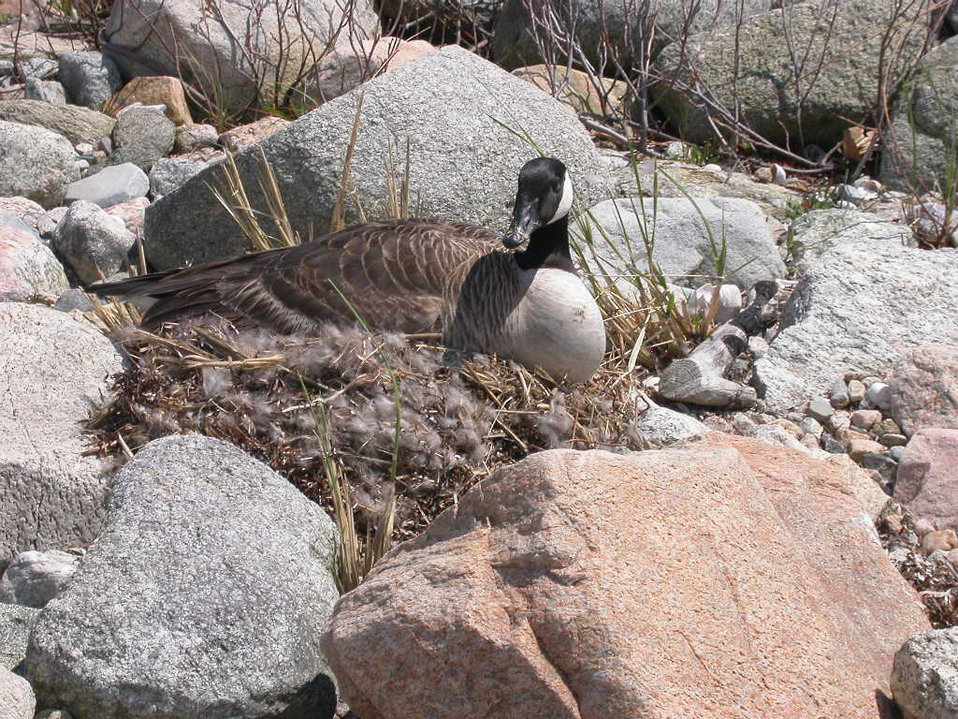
Canada Goose after oil spill, Buzzards Bay, MA.